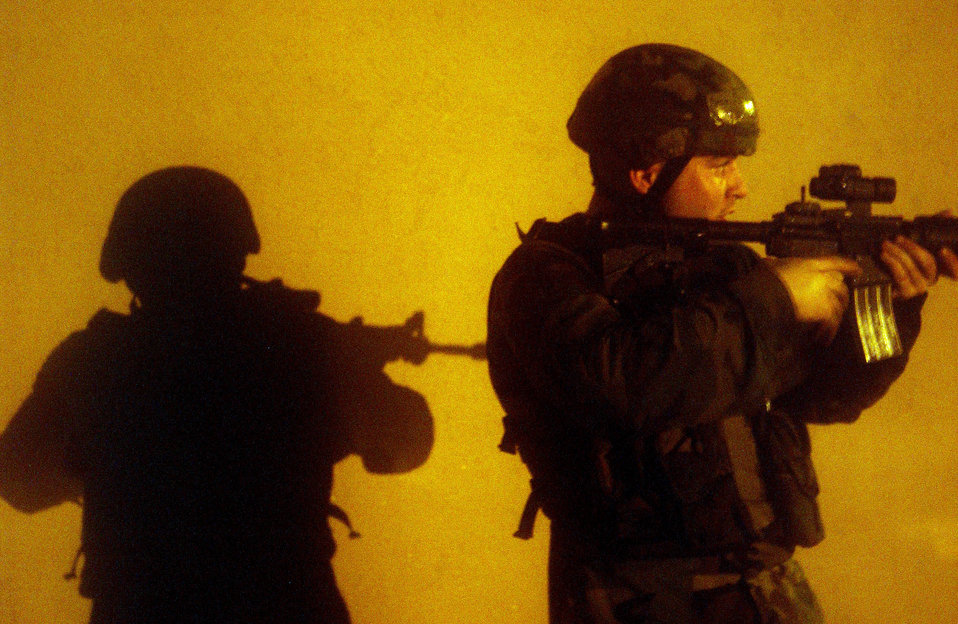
Beverly Bulldog at Osan

A security forces Airman stays on the lookout for